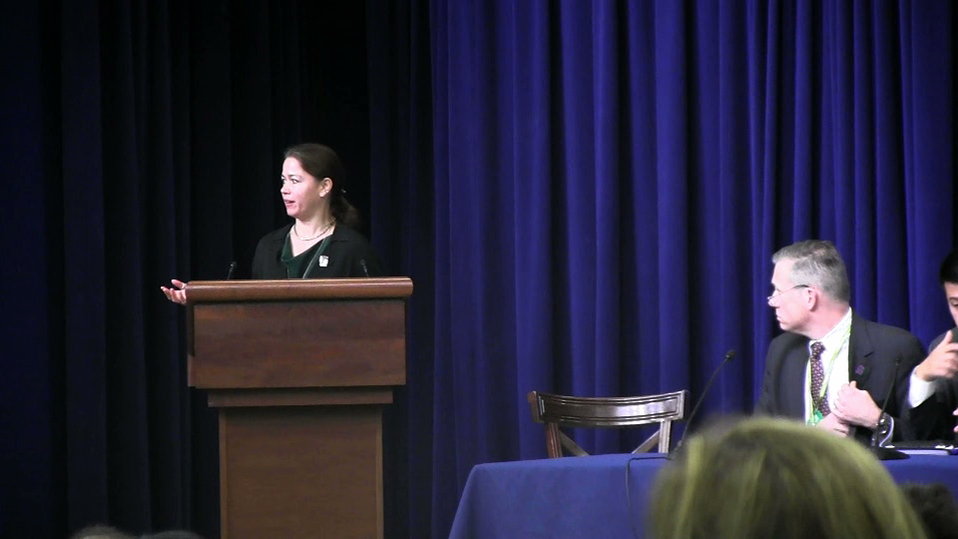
WHDpanel9